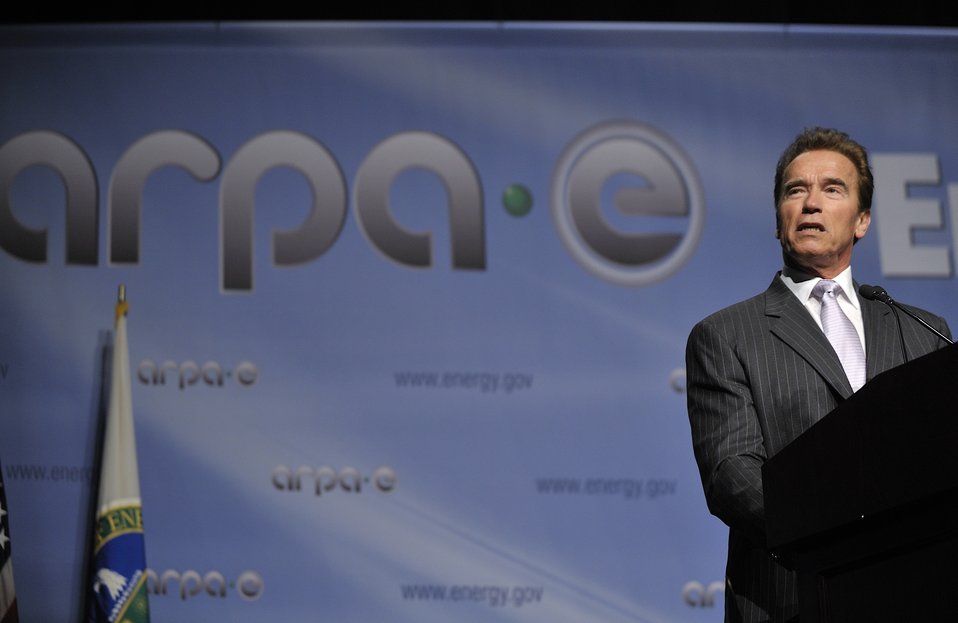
ARPA-E Energy Innovation Summit 2011, 16 of 83

Arnold Schwarzenegger, Former Governor of California. | Energy Department Image | Photo by Ken Shipp | Public Domain |